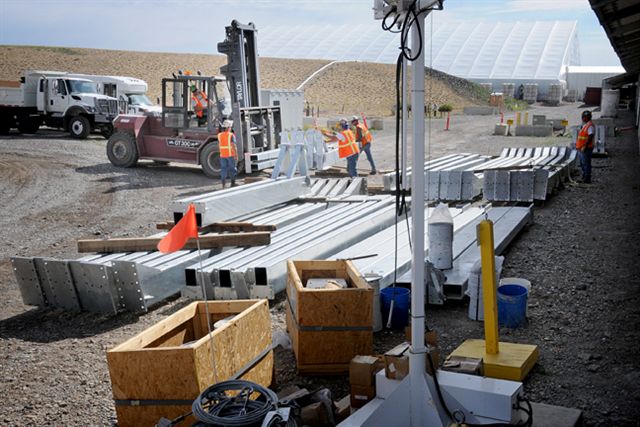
RAN ARP RWMC S123 ARP VI STEELSTAGE 072610 P6558-066 A